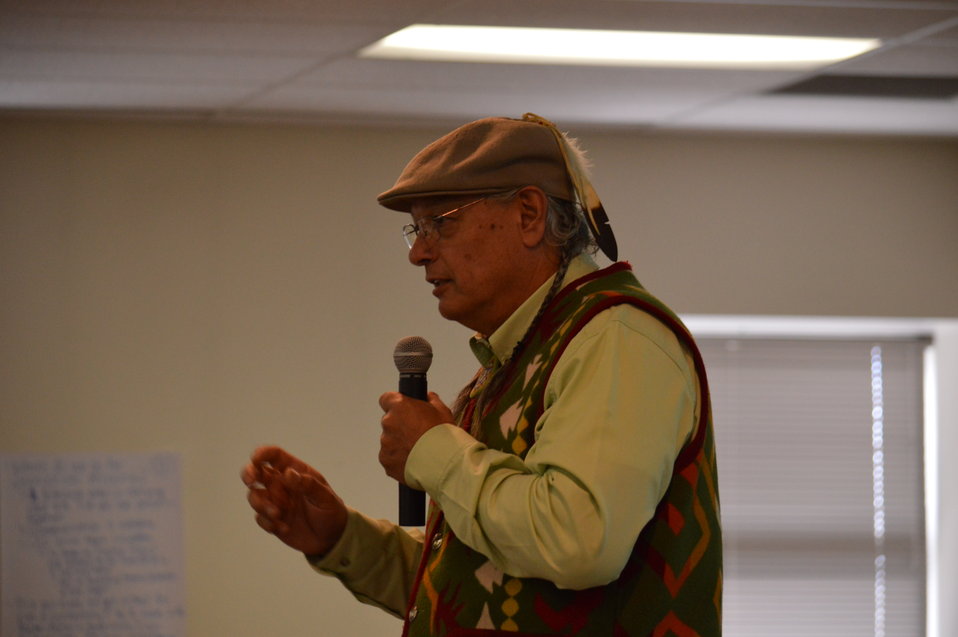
Eagle Summit III

Rick Williams presents over lunch at the Eagle Summit III in Denver, Colorado on March 20, 2014 at the Rocky Mountain Arsenal National Wildlife Refuge.